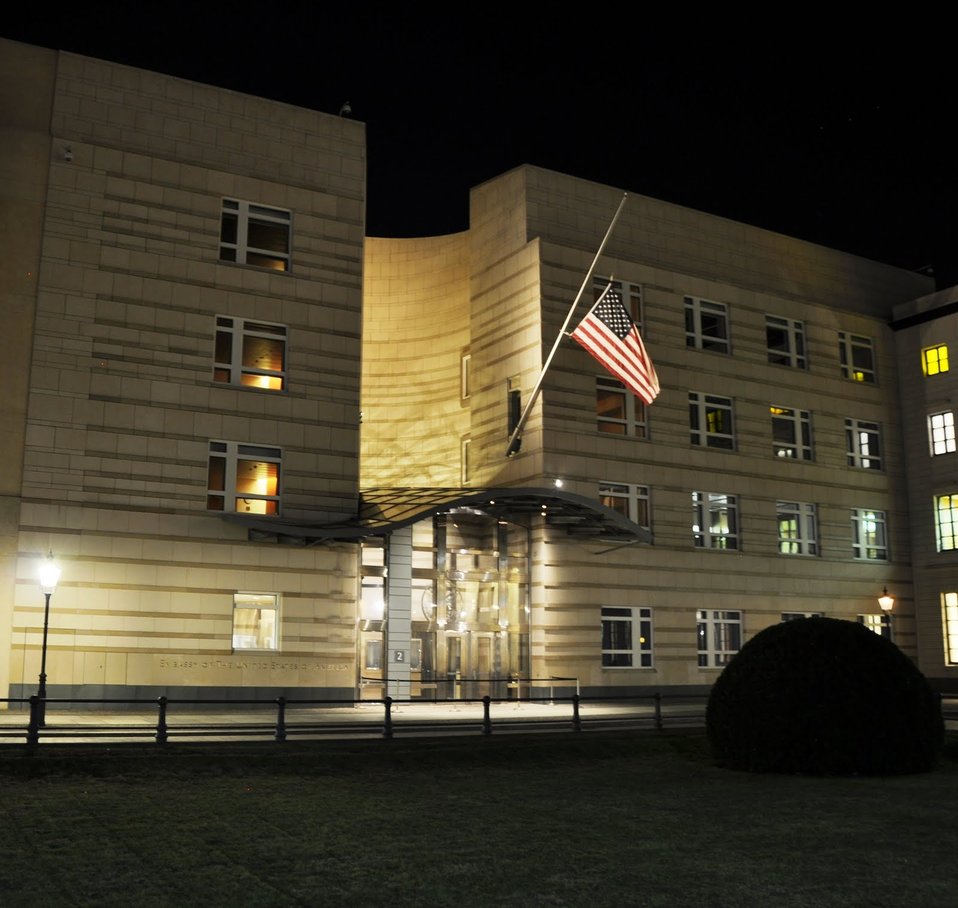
Embassy Berlin Participates in Earth Hour 2011

The U.S. Embassy in Berlin, Germany, participates in Earth Hour 2011 on March 26 2011. All non-essential lights in the chancery were turned for one hour. Earth Hour is a voluntary symbolic action of households, businesses and government to turn off their non-essential lights and other electrical appliances for one hour to raise awareness of the need to take action on climate change.